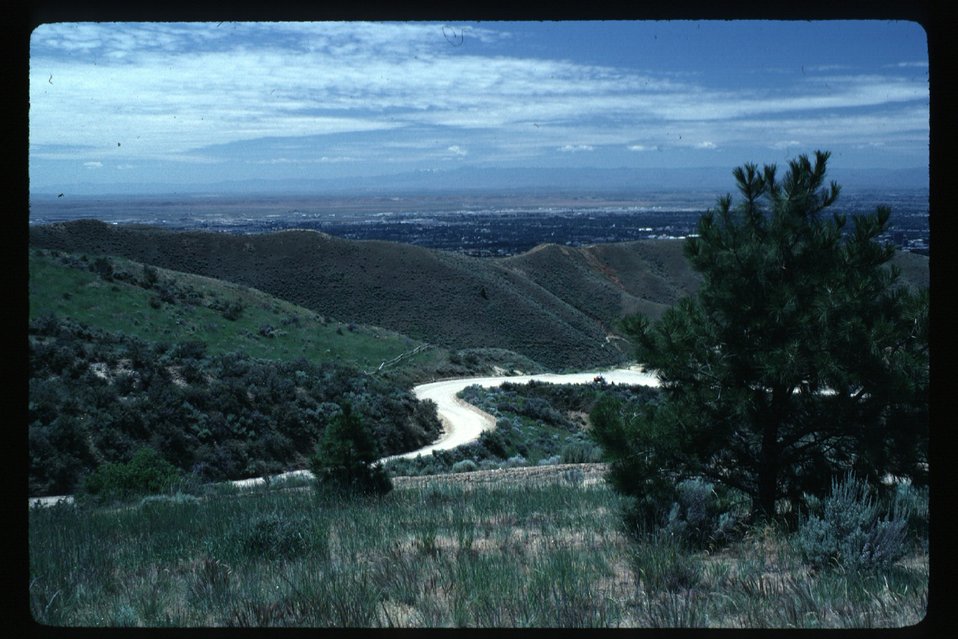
Boise Foothills Boise Front Four Rivers Field Office LSRD Lower Snake River District